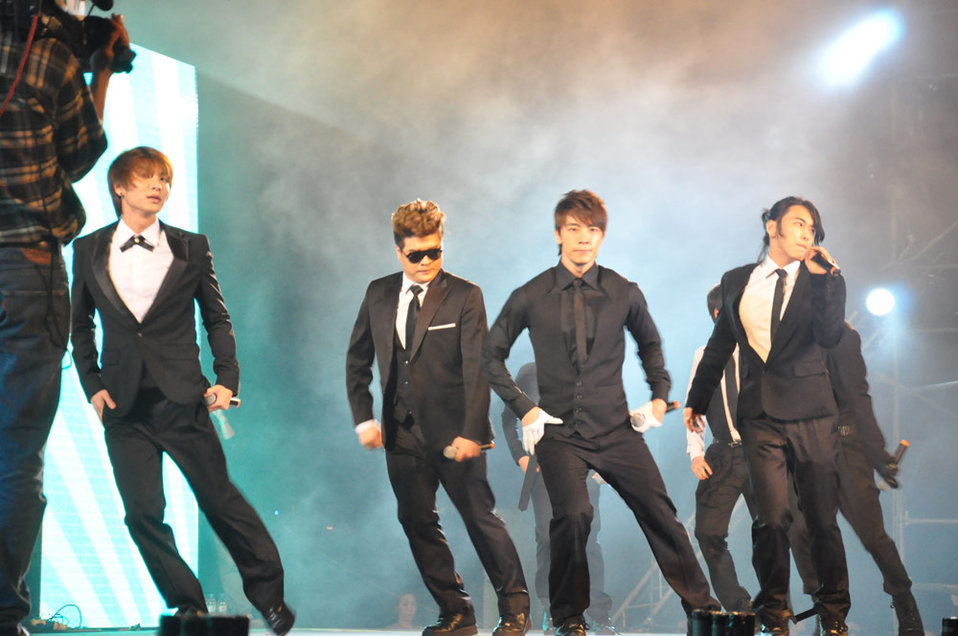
Super Junior performs at the MTV EXIT Hanoi concert March 27, 2010